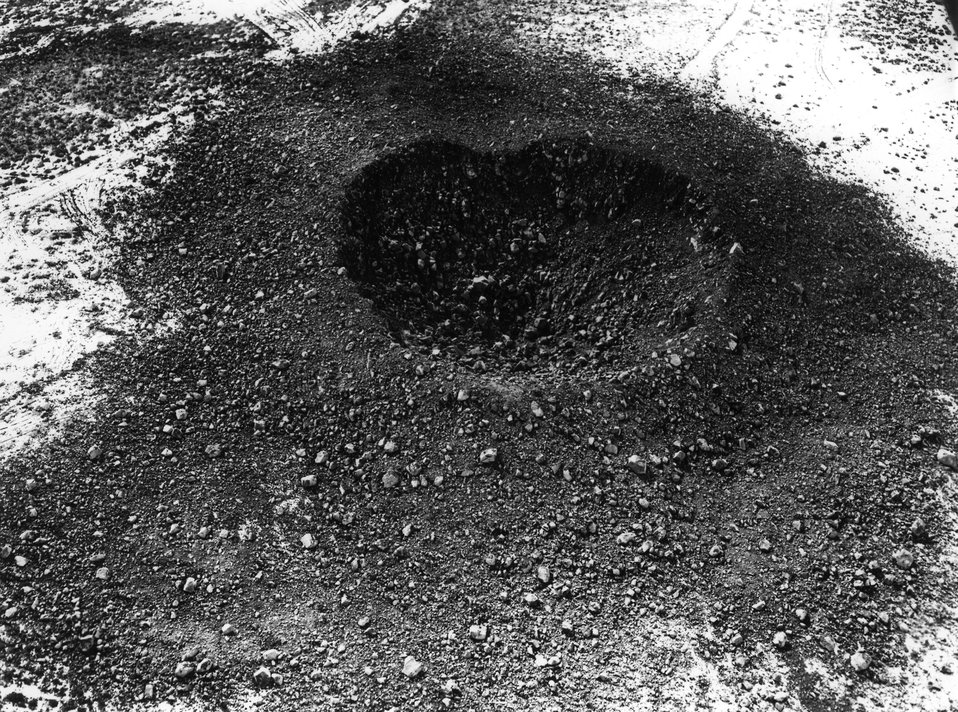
No caption. c. 1960s